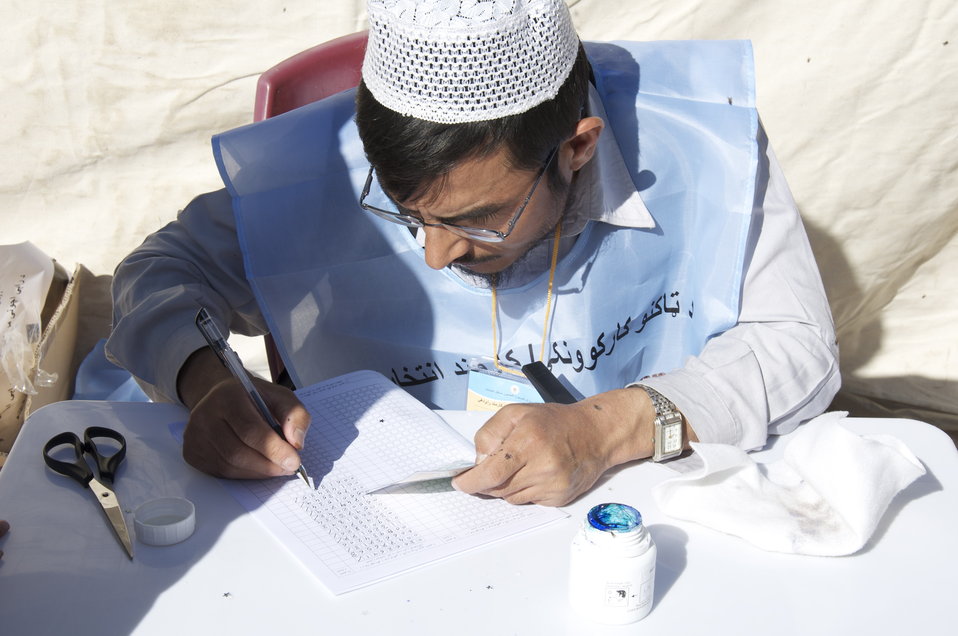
Election Worker